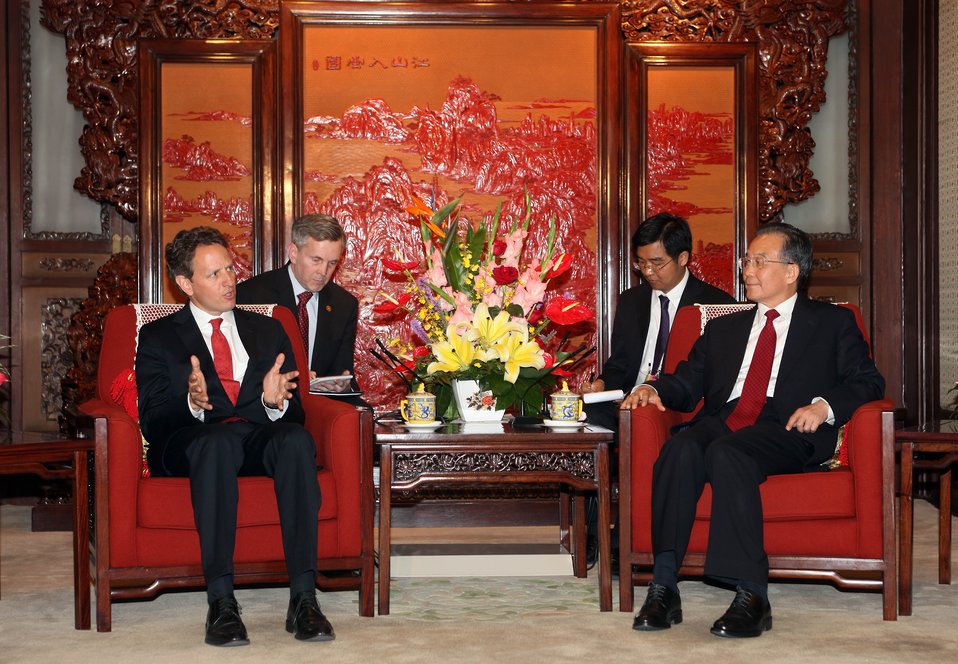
SandED 5/25/10

Secretary Geithner and Premier Wen Jiabao met at the Zhongnanhai to discuss the S&ED.